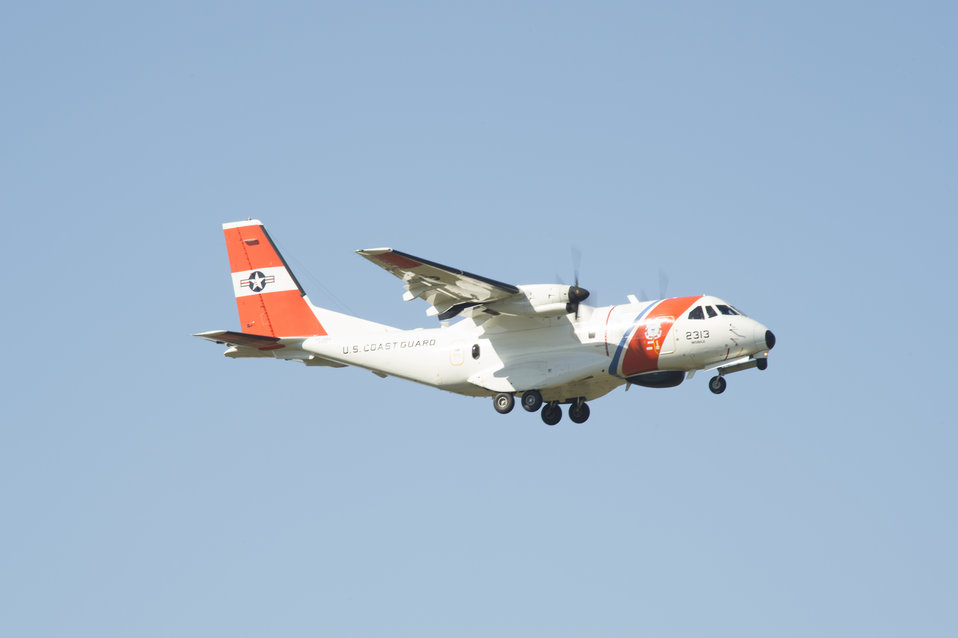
The U.S. Department of Agriculture’s (USDA) Animal and Plant Health Inspection Service (APHIS) Wildlife Services (WS) assists with the humane removal of animals from the Naval Air Station Joint Reserve Base in Belle Chase, LA on Wednesday, Nov. 20, 2013. Animals that wander onto the airstrip are dangerous to aircraft on take off and landing.